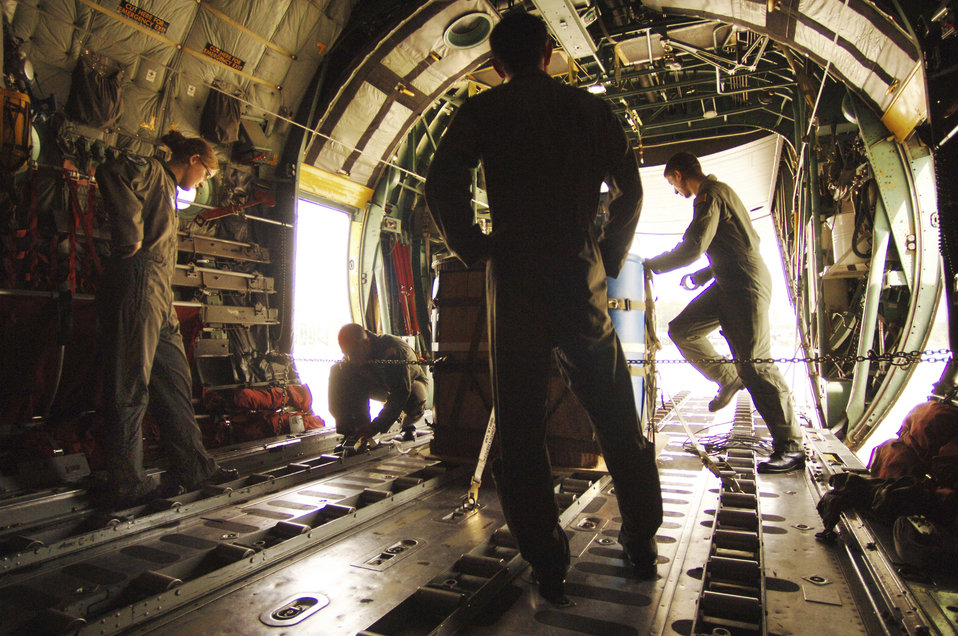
Operation Air Force puts cadets in the air over Europe

Before an airdrop mission over eastern Germany, Air Force Academy Cadet 2nd Class Erin Keane (left) and Cadet 1st Class Matt Sparta observe the preflight duties of C-130 Hercules loadmasters, Staff Sgt. Dan Insurriaga and Senior Airman Matthew Merkely. The cadets were participating in a hands-on, job shadow program called Operation Air Force.